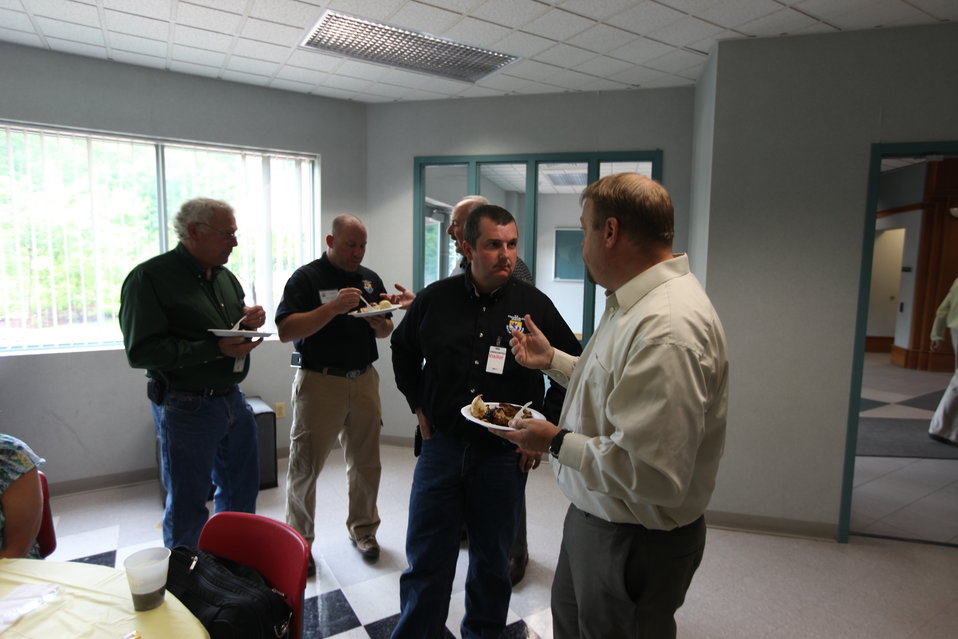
Northeast Region Employee Appreciation Awards

Luncheon